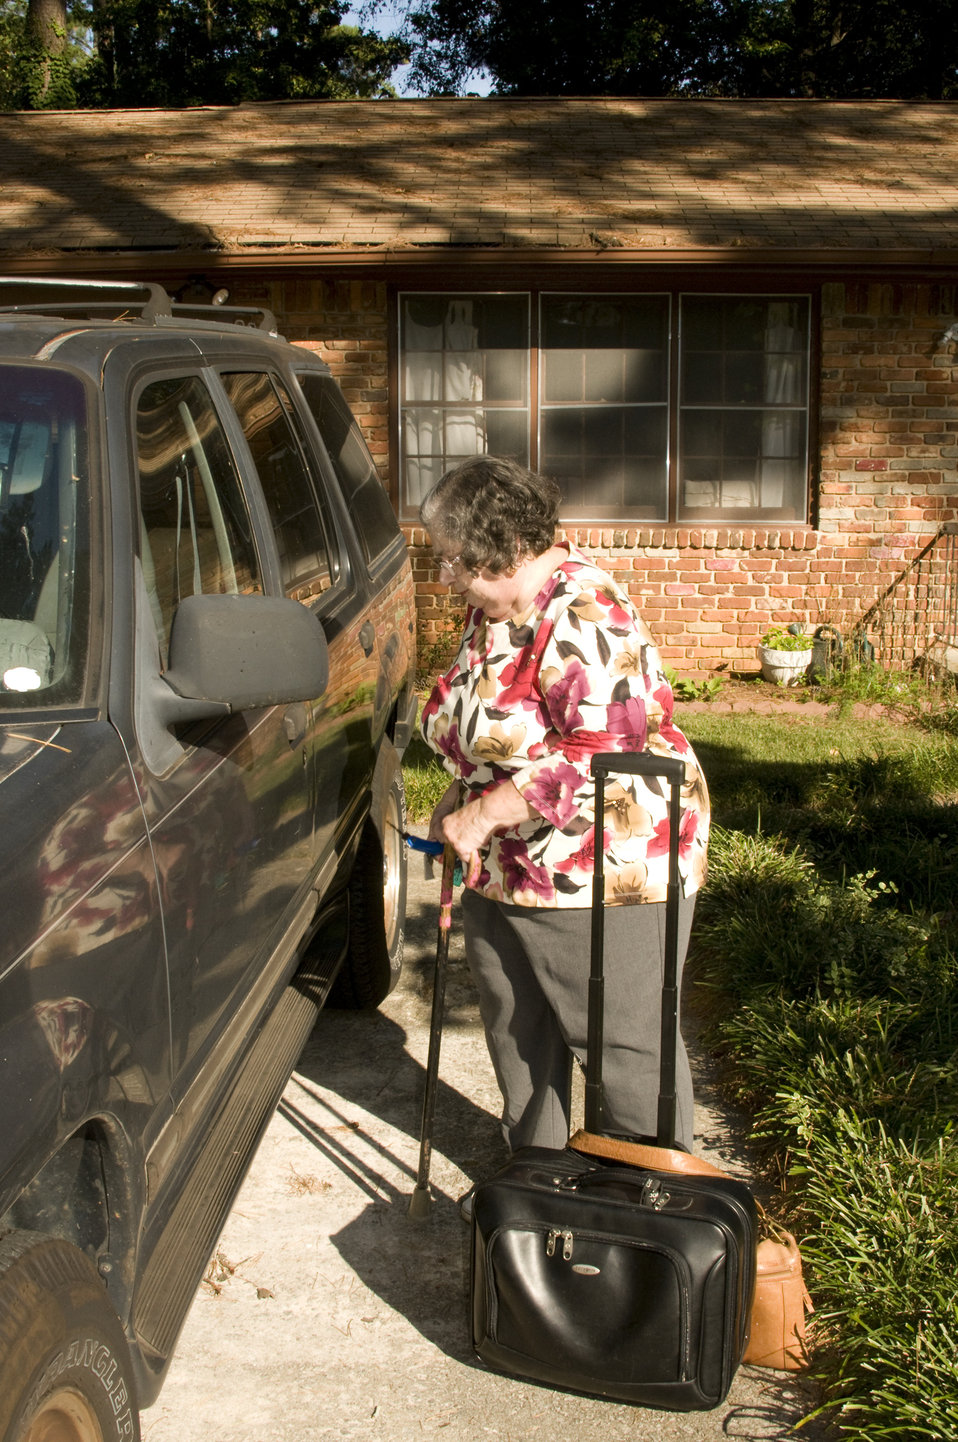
The woman pictured here is a rheumatoid arthritis patient, and was not letting her painful condition impeded her from carrying on with her daily activities, which included the use of a baggage carrier that she was using to move a small piece of luggage over to her vehicle after exiting her home. Note that in her left hand she held her cane, and in her right, the keys to her vehicle.